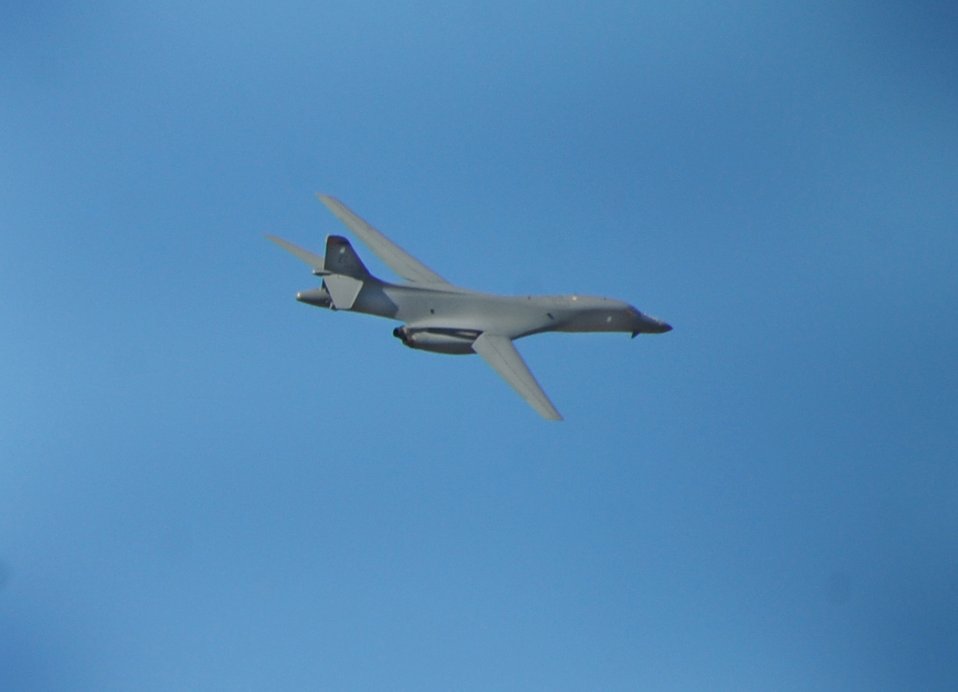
Phase II Operational Readiness Inspection

A B-1B Lancer takes off during a Phase II Operational Readiness Inspection Oct. 15, 2010, at Ellsworth Air Force Base, S.D. Carrying the largest payload of both guided and unguided weapons in the Air Force inventory, the multi-mission B-1 is the backbone of America's long-range bomber force.